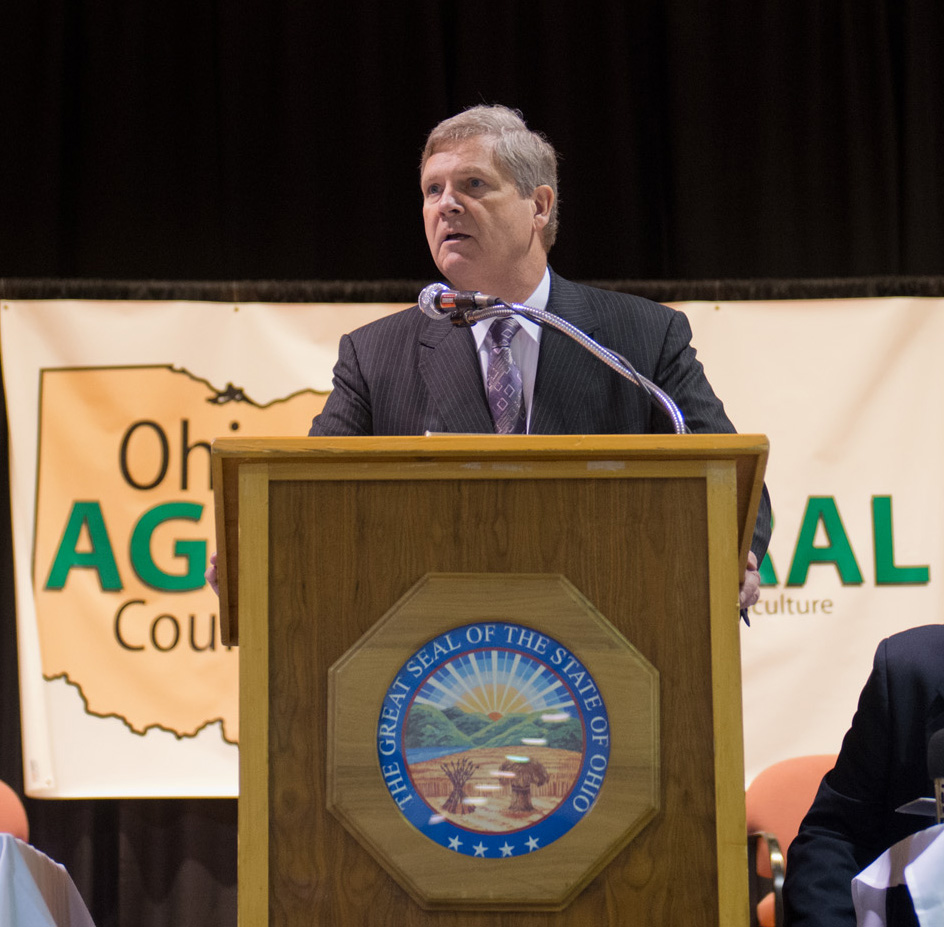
Agriculture Secretary Tom Vilsack speaks at the Ohio Agricultural Council Hall of Fame Breakfast in Columbus, OH on Friday, August 3, 2012. Secretary Vilsack was the keynote speaker and spoke about how important Agriculture is to the nation. The Secretary stated he is proud of The Ohio State University and its research and the need to involve American youth in the industry as tomorrow's leaders.